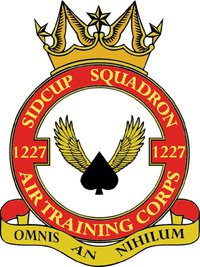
1227 (Sidcup) Squadron ATC crest